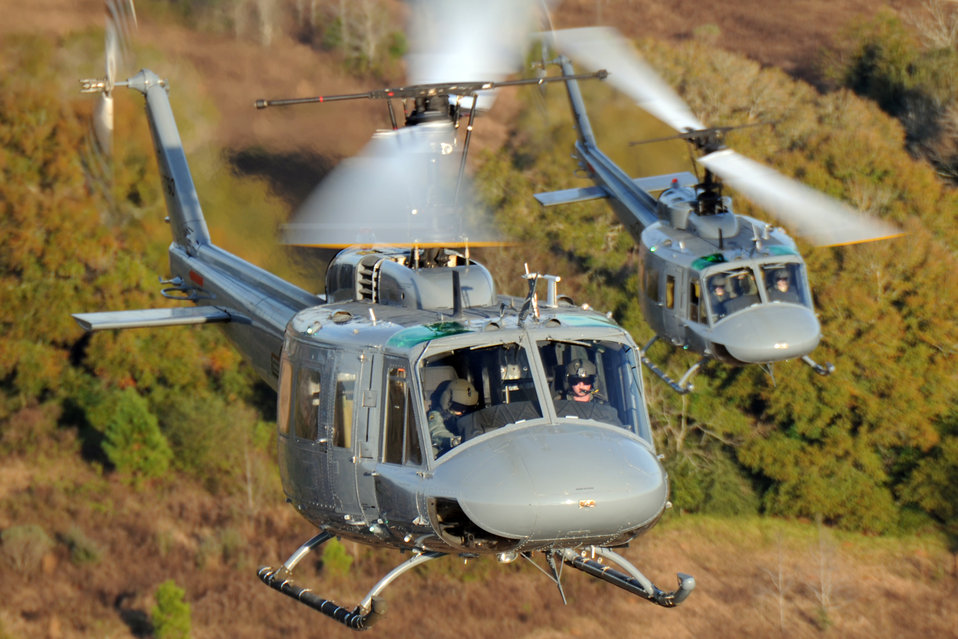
Helicopter training

Students from the 23rd Flying Training Squadron at Fort Rucker, Ala., piloting UH-1H Iroquois helicopters, practice formation-flight patterns. The 23rd FTS is the third and final phase of undergraduate pilot training before the student pilots can obtain their wings. It is the Air Force's primary source of helicopter pilot training for special operations, combat search and rescue, missile support and distinguished visitor airlift missions.